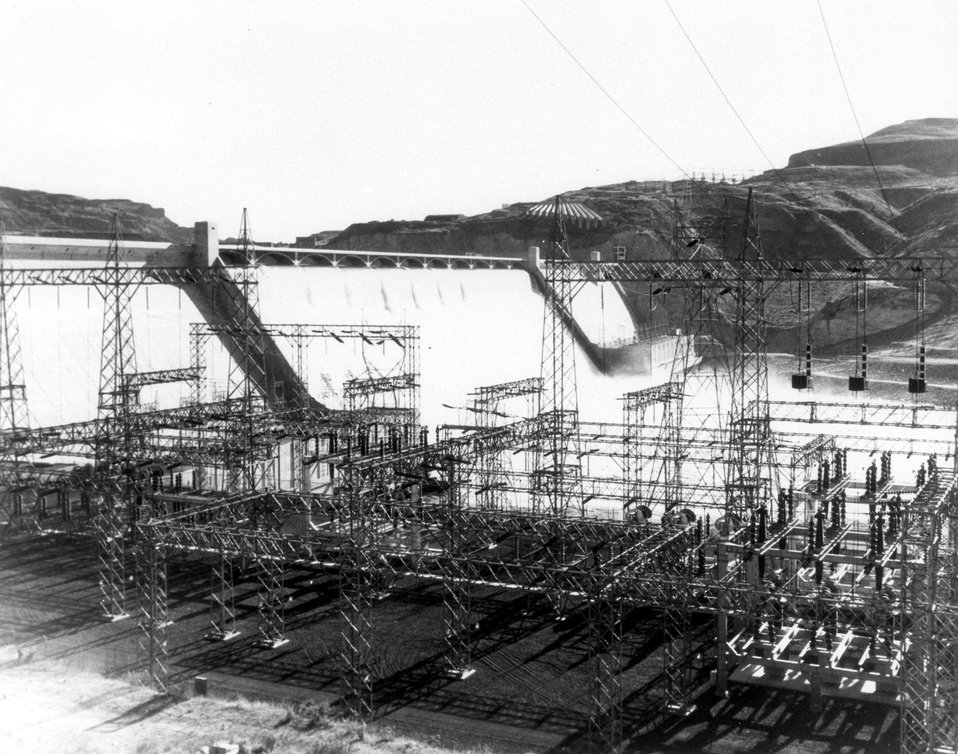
SI Grand Coolee Dam(?) and switch yard.